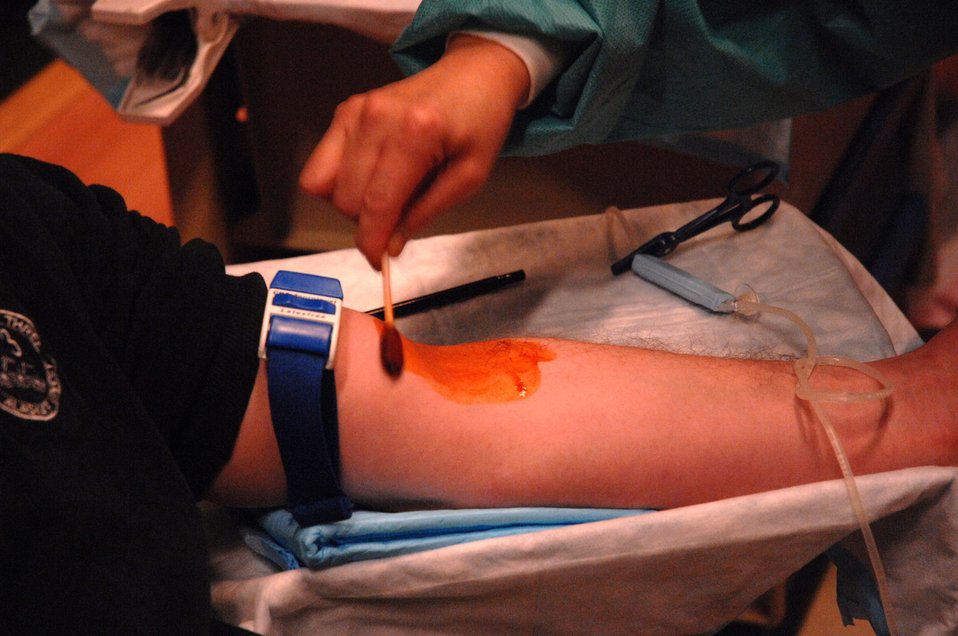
Blood donation

Iodine is used to clean the injection area of a blood donor during the mobile blood drive Nov. 21 at Eielson Air Force Base, Alaska. The Blood Bank of Alaska supplies blood to military and civilian hospitals throughout Alaska.